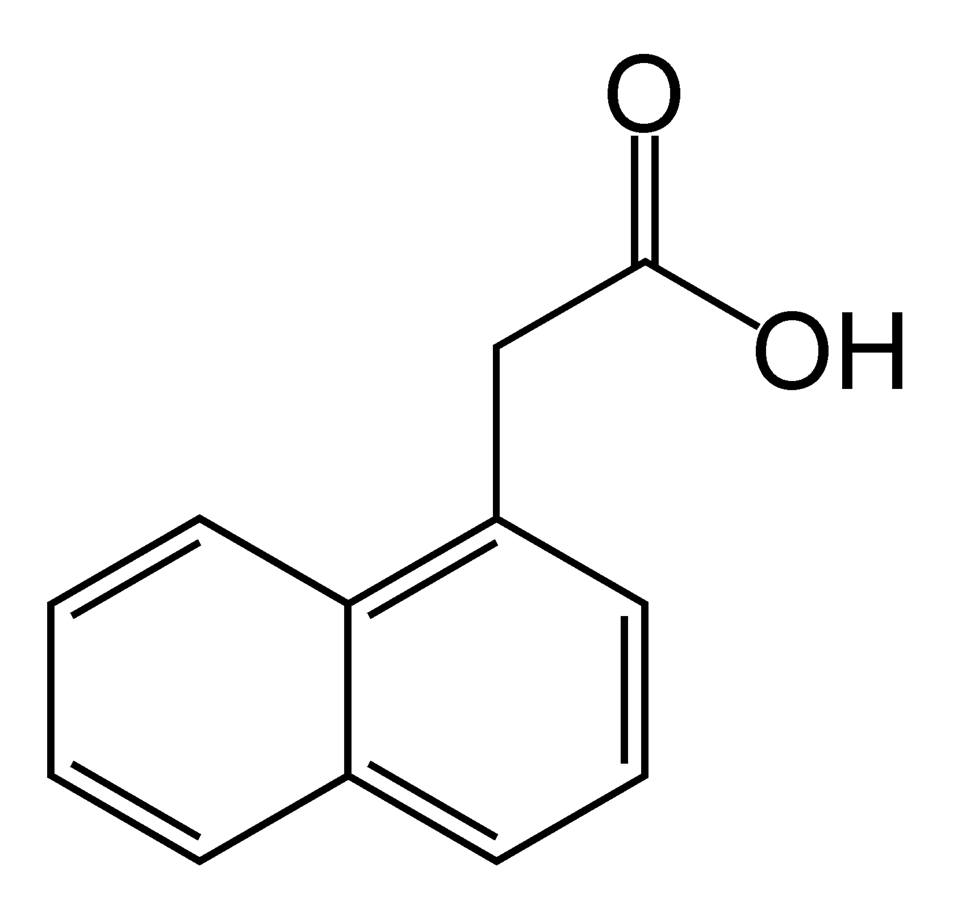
1-Naphthaleneacetic acid